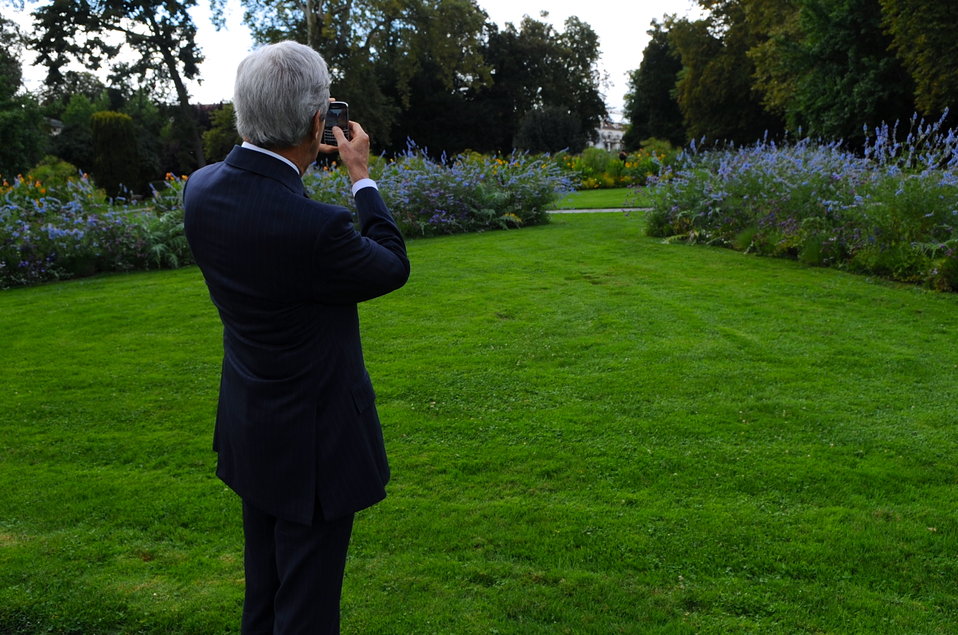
Secretary Kerry Pauses to Capture Flower Garden in Geneva

4:30 p.m., September 12, 2013 - U.S. Secretary of State John Kerry pauses to take a cellphone picture of a flower garden on the banks of Lake Geneva following a working lunch with members of his senior staff focused on upcoming negotiations with Russian officials about eliminating Syrian chemical weapons.